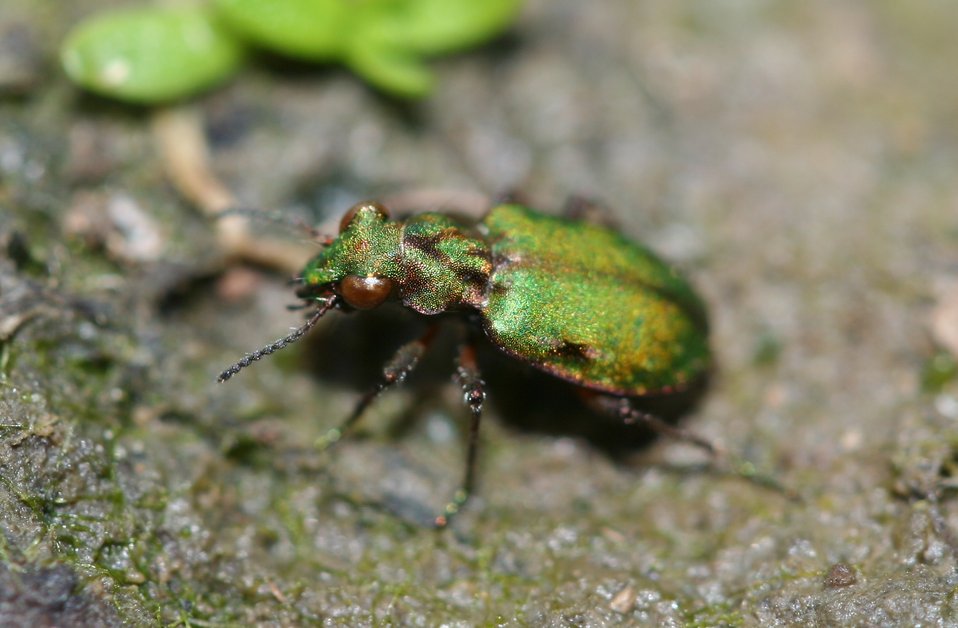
Delta Green ground beetle